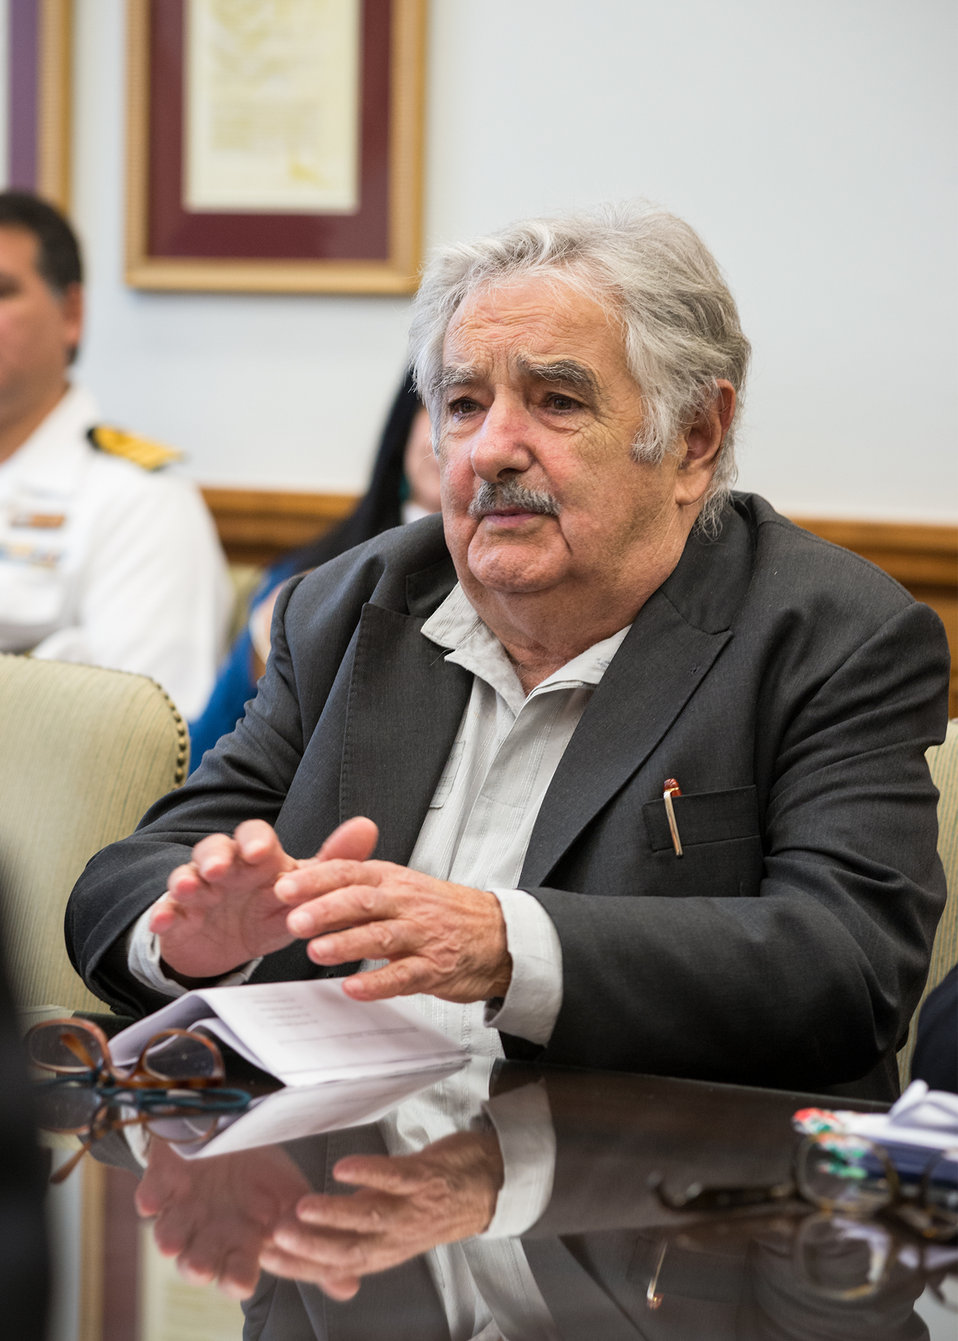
Uruguay President Jose Mujica discusses cooperation in agricultural research, production and climate changes on agriculture with Agriculture Secretary Tom Vilsack at the U.S. Department of Agriculture (USDA) in Washington, D.C. on Wednesday, May 14, 2014.